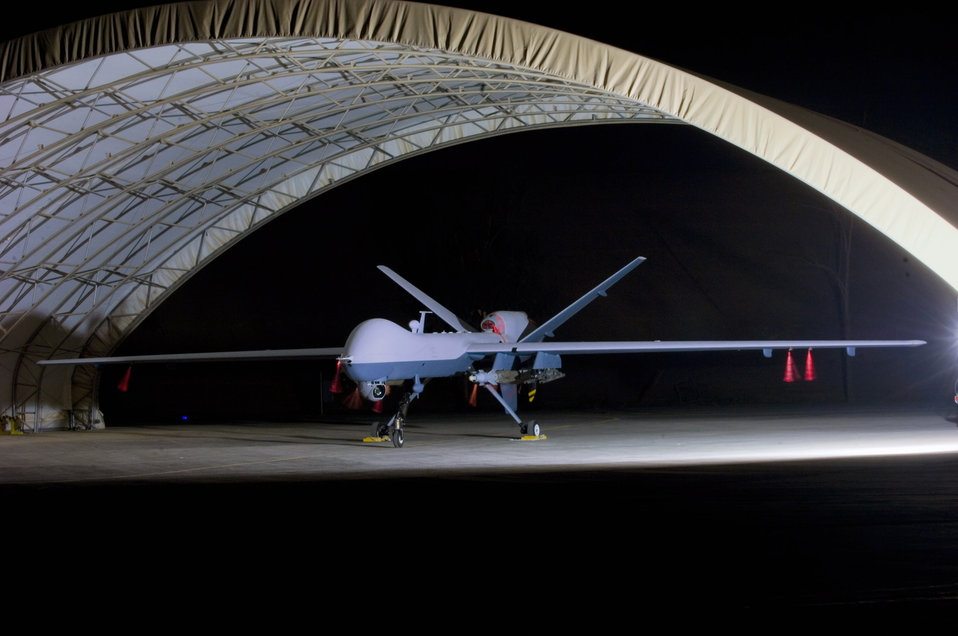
ISR operations: Eye in the sky

An armed MQ-9 Reaper unmanned aircraft sits in a shelter at Joint Base Balad, Iraq, before a mission. Larger and more powerful than the MQ-1 Predator, the Reaper can carry up to 3,750 pounds of laser-guided bombs and Hellfire missiles.